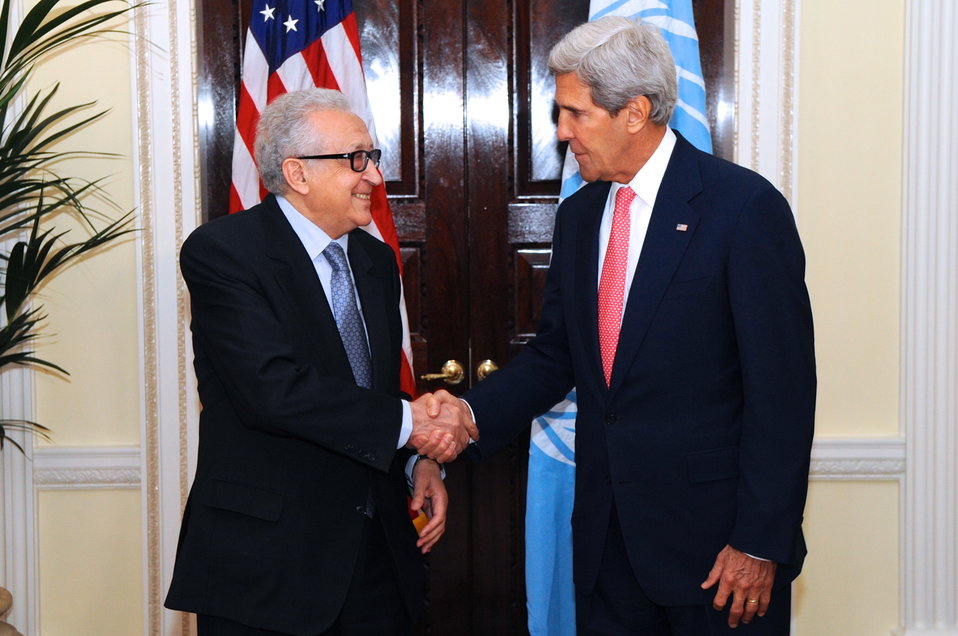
Secretary Kerry, Special Representative Brahimi Shake Hands After News Conference

U.S. Secretary of State John Kerry and Lakhdar Brahimi, the United Nations Special Representative for Syria, shake hands after addressing reporters following a meeting at the U.S. Ambassador's Residence in London, United Kingdom on October 14, 2013.